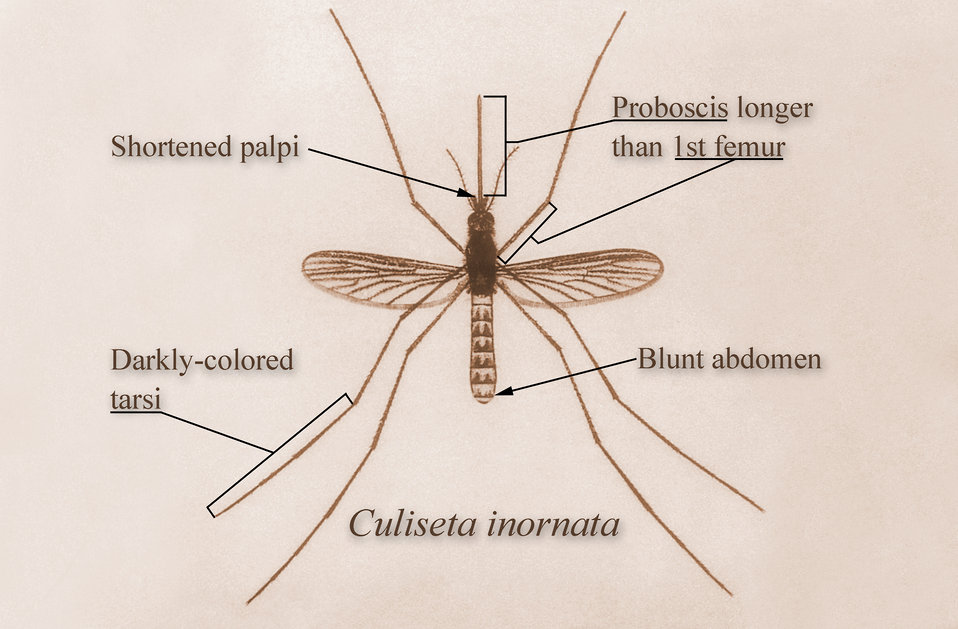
This illustration depicts a dorsal view of a Culiseta inornata mosquito. See PHIL 2079, for an illustration highlighting the morphologic characteristics displayed by the mosquito members of the genus Culiseta.